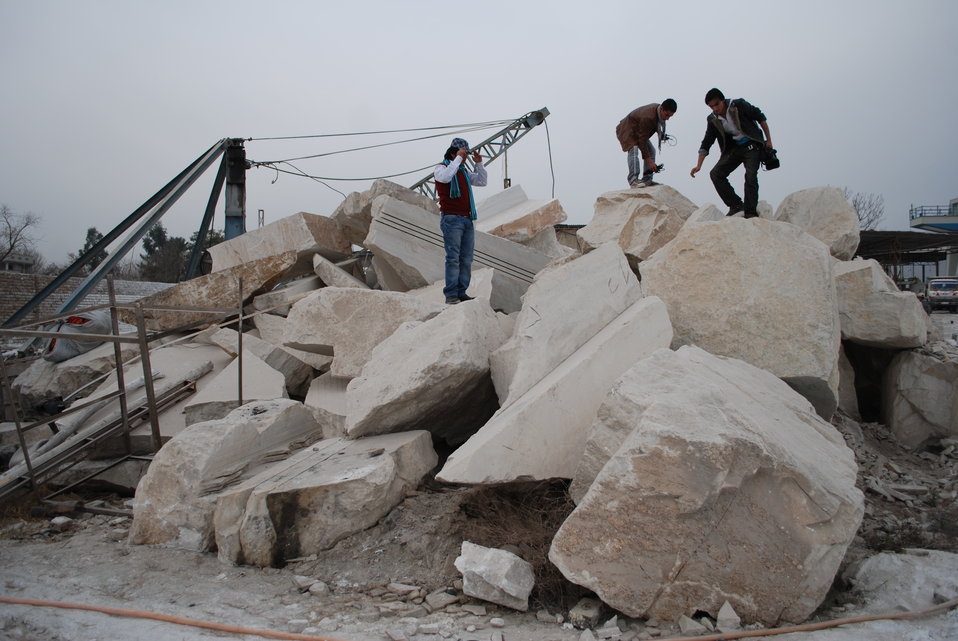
'On the Road' in Nangarhar Province